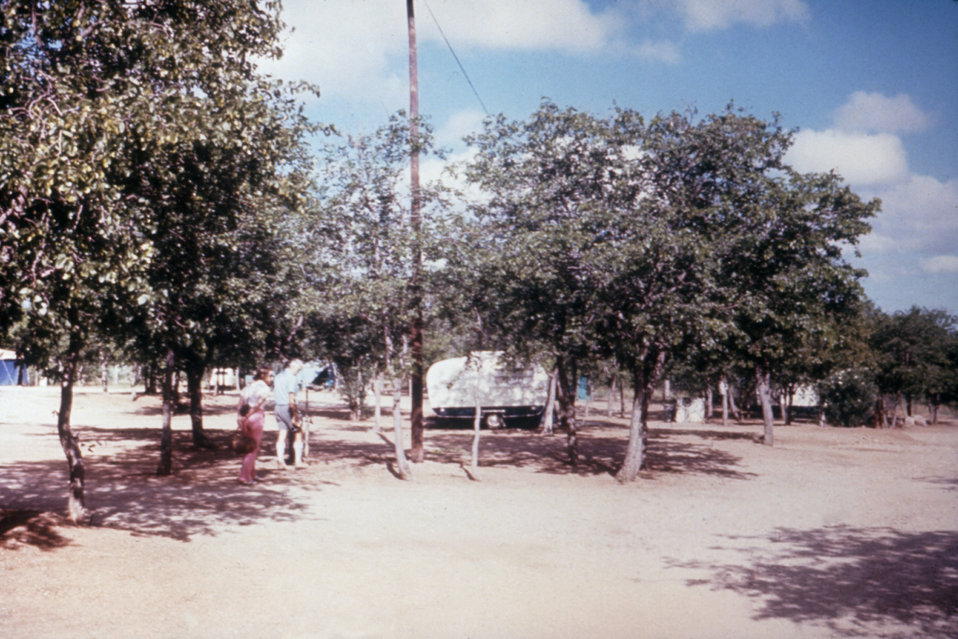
This was the Beitbridge, Zimbabwean campground where 2 travelers stayed in 1975 before becoming ill with Marburg disease.